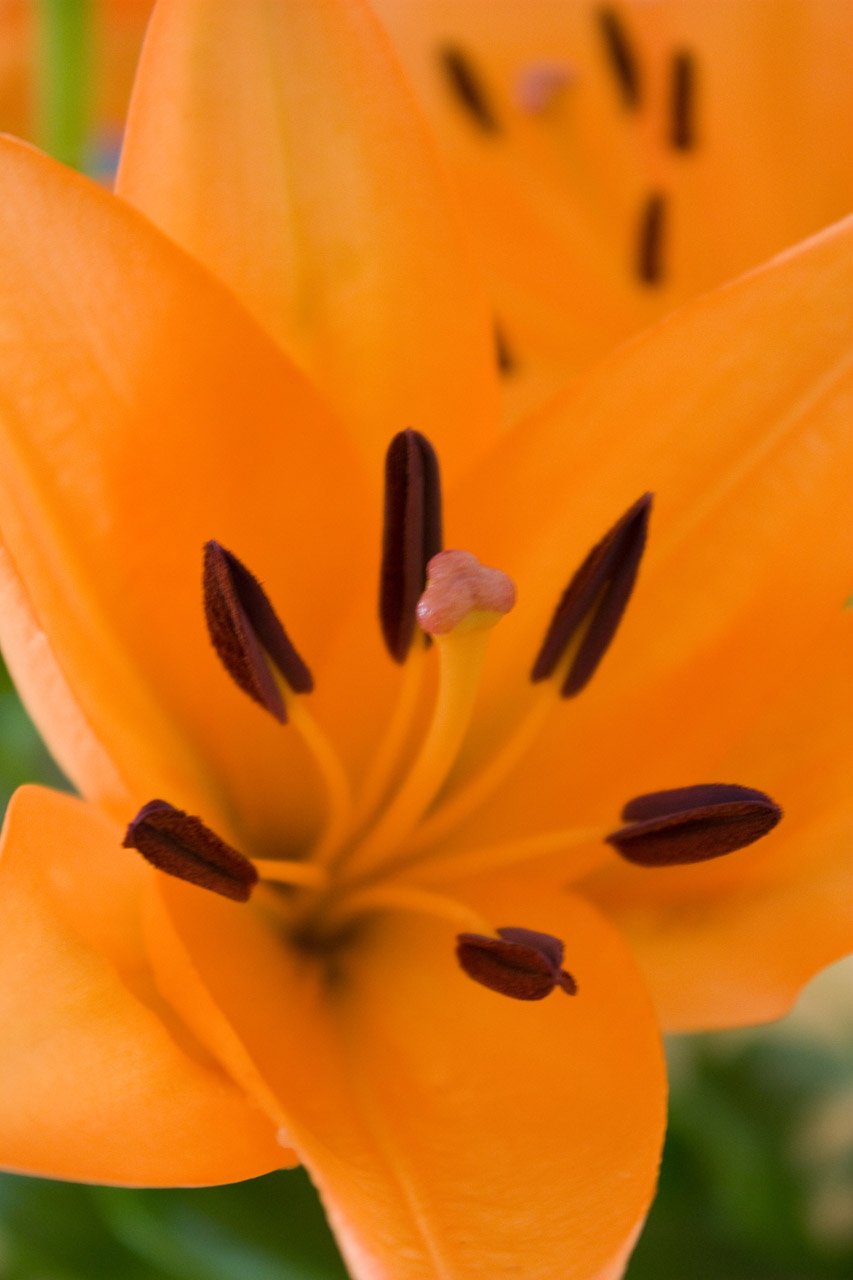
Lilies

Orange lilies.